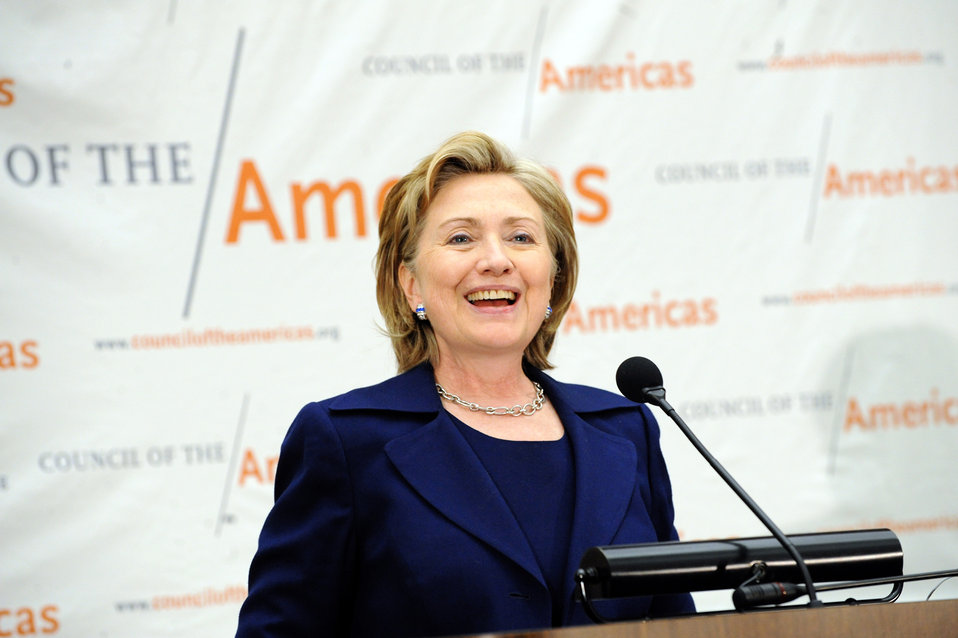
Secretary Clinton Remarks at Washington Conference of the Council of the Americas

U.S. Secretary of State Hillary Rodham Clinton delivers closing remarks during the 39th Washington Conference of the Council of the Americas held at the U.S. Department of State in Washington, DC May 13, 2009.